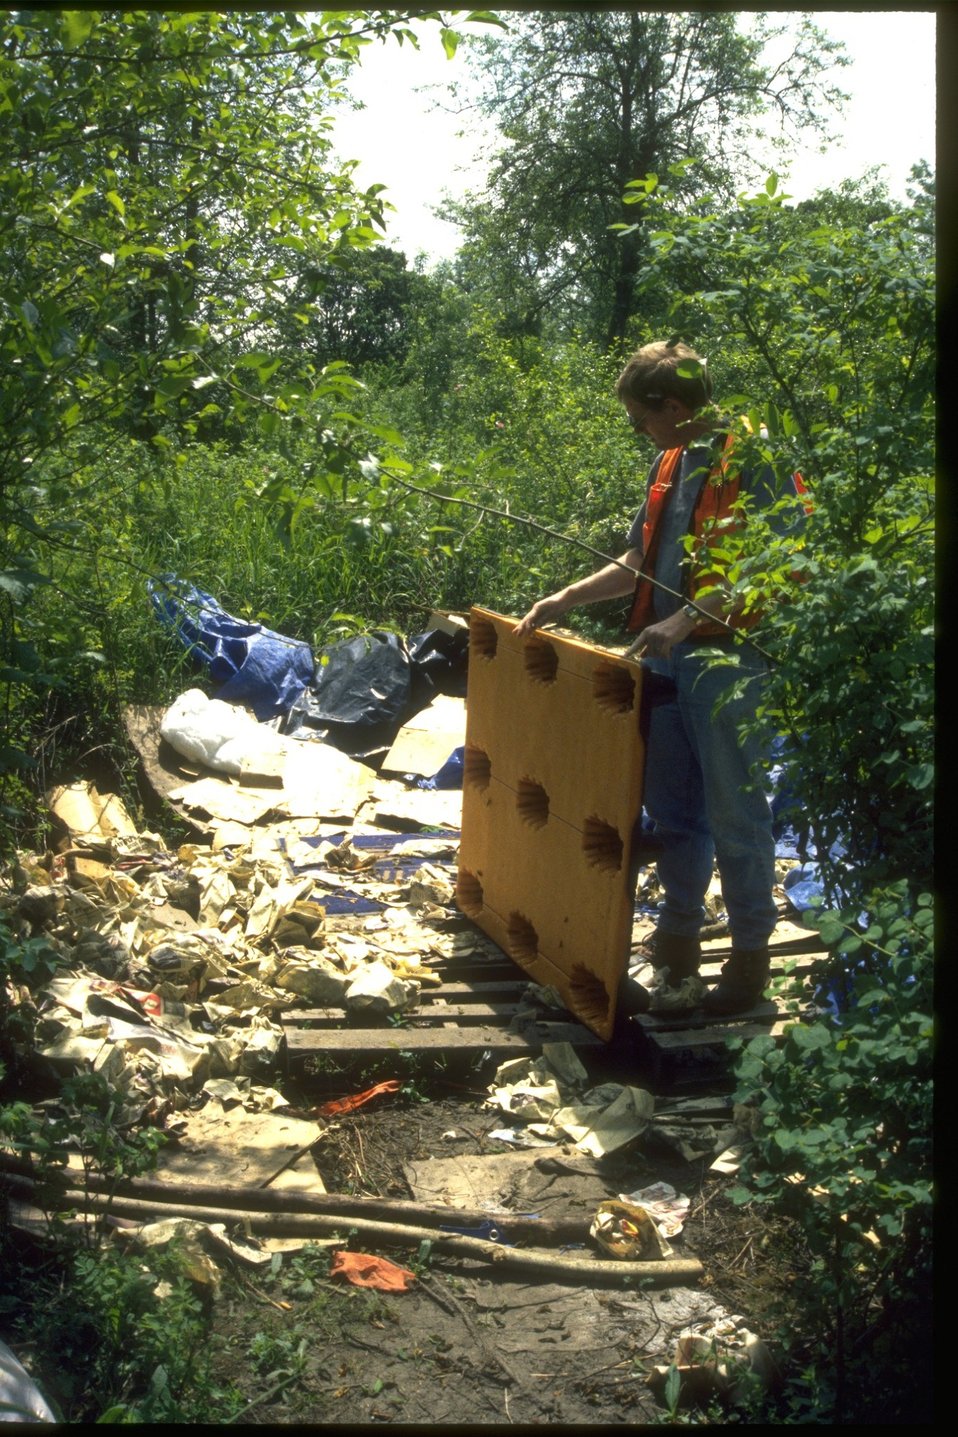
Trash dumping on public lands.